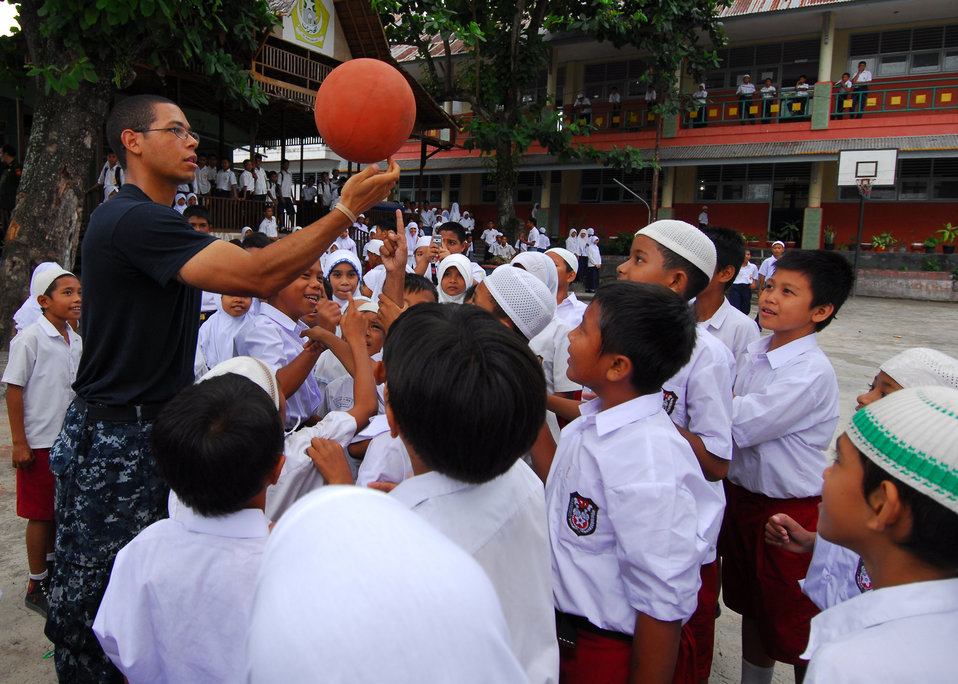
Mass Communication Specialist 3rd Class Matthew Jackson teaches children how to spin a basketball on their fingertip during a community service event at Kalumpang Kota Orphanage and School in Ternate, Indonesia, on July 19, 2010. The Military Sealift Command hospital ship USNS Mercy (T-AH 19) is in the North Maluku Islands conducting Pacific Partnership 2010, the fifth in a series of annual U.S. Pacific Fleet endeavors conducted in Indonesia as a disaster relief exercise aimed at strengthening regional partnerships.